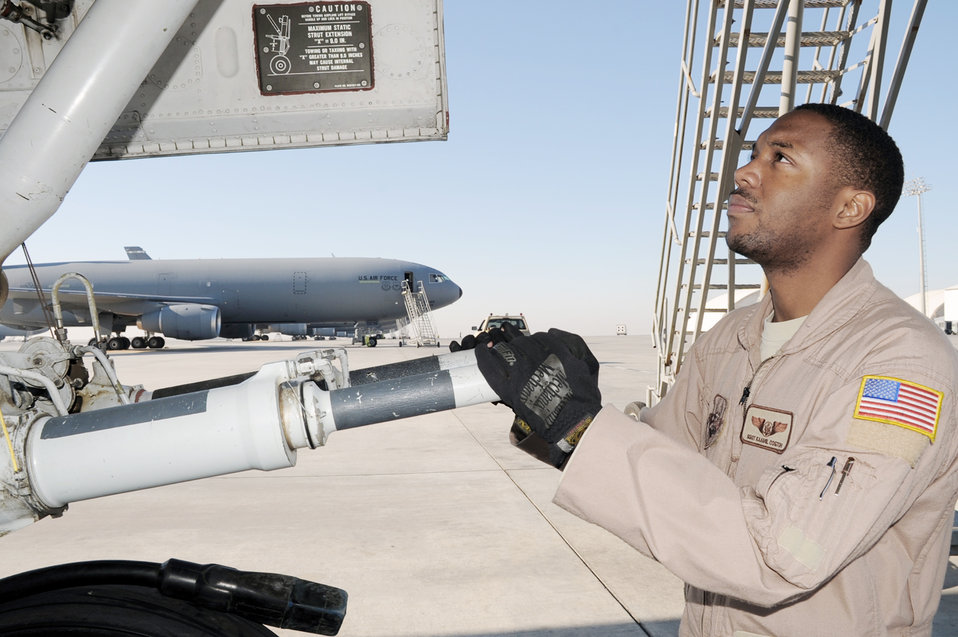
KC-10s keep aircraft flying in Southwest Asia

Staff Sgt. Kaamil Coston checks the landing gear of a KC-10 Extender Jan. 8, 2009, at an air base in Southwest Asia. Sergeant Coston is KC-10 flight engineer with the 908th Expeditionary Air Refueling Squadron, and deployed from the 2nd Air Refueling Squadron at McGuire Air Force Base, N.J. His hometown is Staten Island, N.Y.